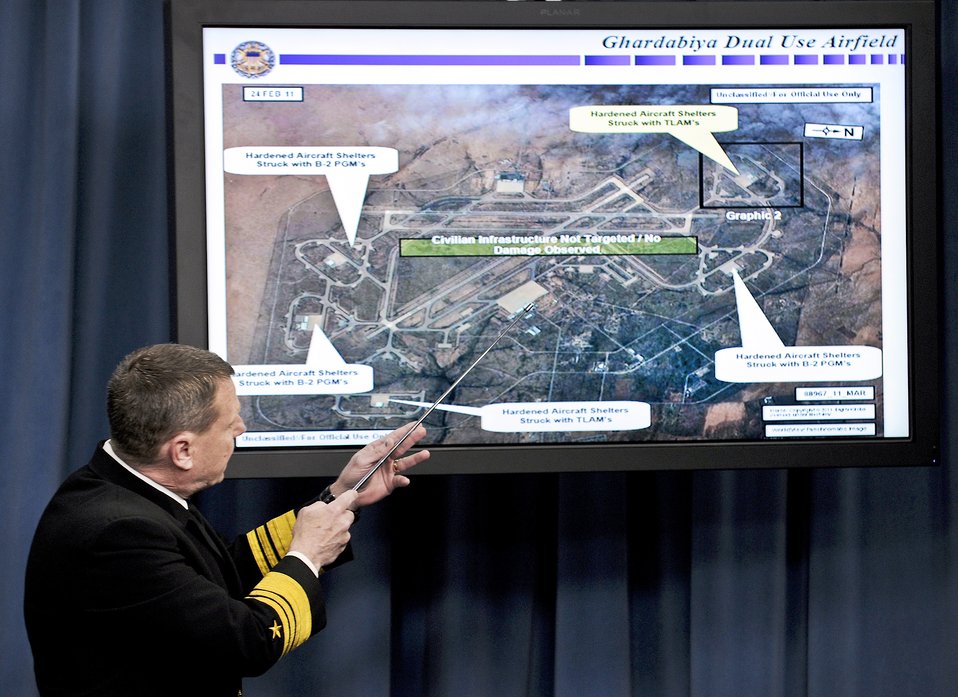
No-fly zone in place, but danger remains, admiral says

Navy Vice Adm. William E. Gortney updates reporters on Operation Odyssey Dawn March 20, 2011, at the Pentagon. Admiral Gortney is the director of the Joint Staff.